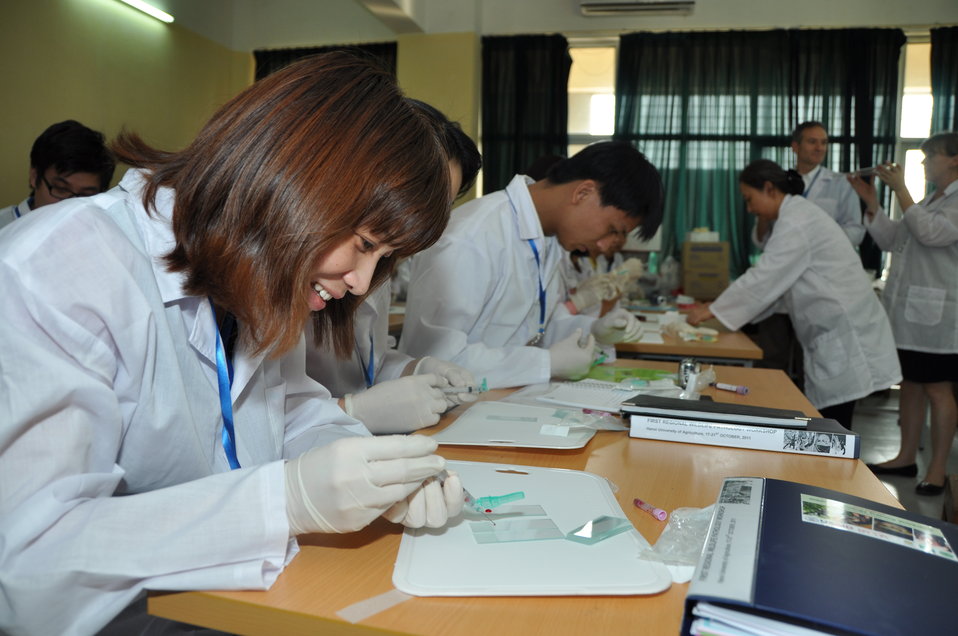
USAID EPT Smithsonian Pathology Training to Detect Emerging Infectious Diseases Wildlife and Other Animals in Vietnam Workshop